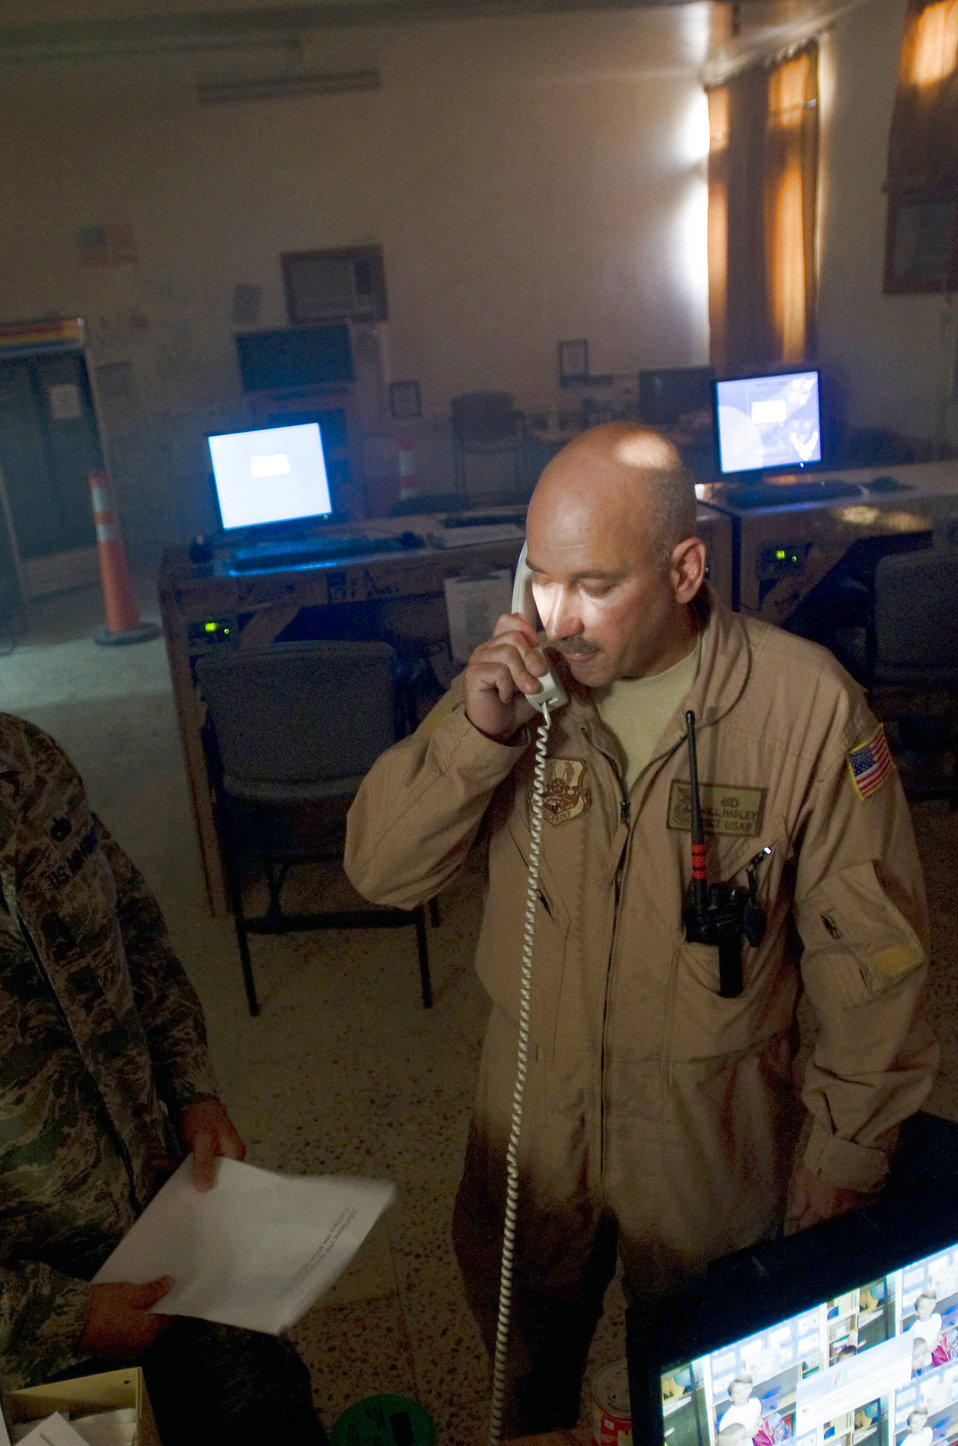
Practice makes perfect

Master Sgt. William Hadley Jr. calls in a simulated fire in the passenger terminal Oct. 3 at Ali Base, Iraq. The 407th Expeditionary Civil Engineer Squadron's fire department held a structural drill to evaluate its response to a fire alert. Sergeant Hadley, the assistant chief of training for the 407th ECES, is deployed from Eglin Air Force Base, Fla.